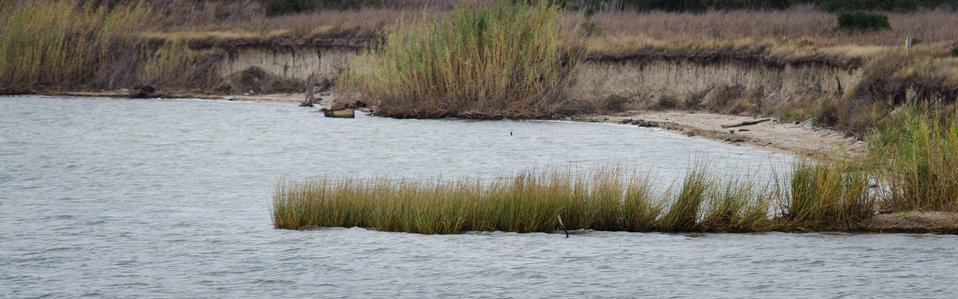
San Antonio Bay is the primary body of water for the Aransas National Wildlife Refuge, in Austwell, TX on Friday, December 16, 2011. Typical of a coastal prairie shoreline, Phragmites reed grass helps stabilize the shore.
State Conservationist Salvador Salinas commented on the USDA-NRCS Gulf of Mexico Initiative (GoMI) during a press conference, about improving water quality, habitat, and the health of the Gulf ecosystem. “Launching this initiative is a top priority for NRCS in Texas because the Gulf of Mexico is one of our state’s premier natural resources. It provides vital habitat for wildlife, and creates jobs in industries that depend upon them. The health of this resource is essential to Texas as well as to the nation,” said Salvador Salinas. The Texas initiative focuses on three watersheds in Refugio, Calhoun, Victoria and Aransas counties and ultimately the Gulf of Mexico.
“What is really compelling about GoMI and other similar conservation efforts is that they prove that Texas farmers and ranchers not only feed and clothe us and power our vehicles, but they can also help protect and restore our rivers and provide more habitat for wildlife,” stated Salinas. “That’s why it is important that this conservation project is not about taking productive farm land out of production. This is a working lands initiative, so that not only are we helping to restore the health of the Gulf, but we’re also helping to sustain and enhance the productivity of the Gulf’s farms and ranches.”
Nationally, USDA-NRCS is dedicating up to $50 million over three years to this effort.
NRCS will continue to provide proven technical expertise and that of their partners. The anticipated result is improved water quality, stream flows and wildlife habitat.